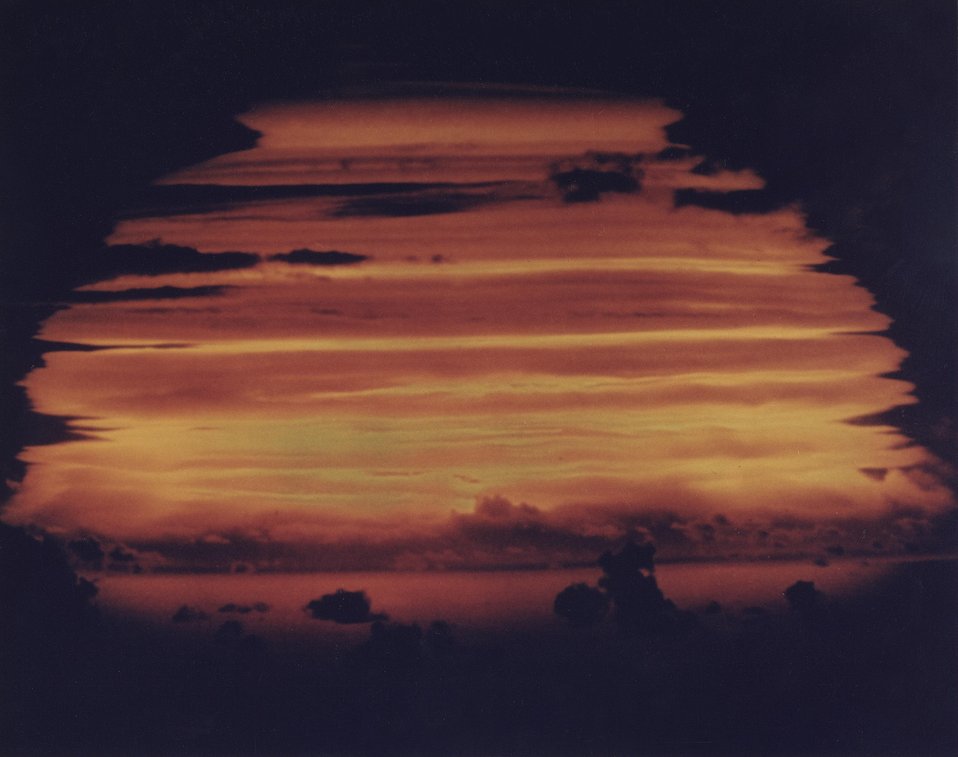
The Apache shot was fired from a barge on July 8, 1956, on Enewetak.